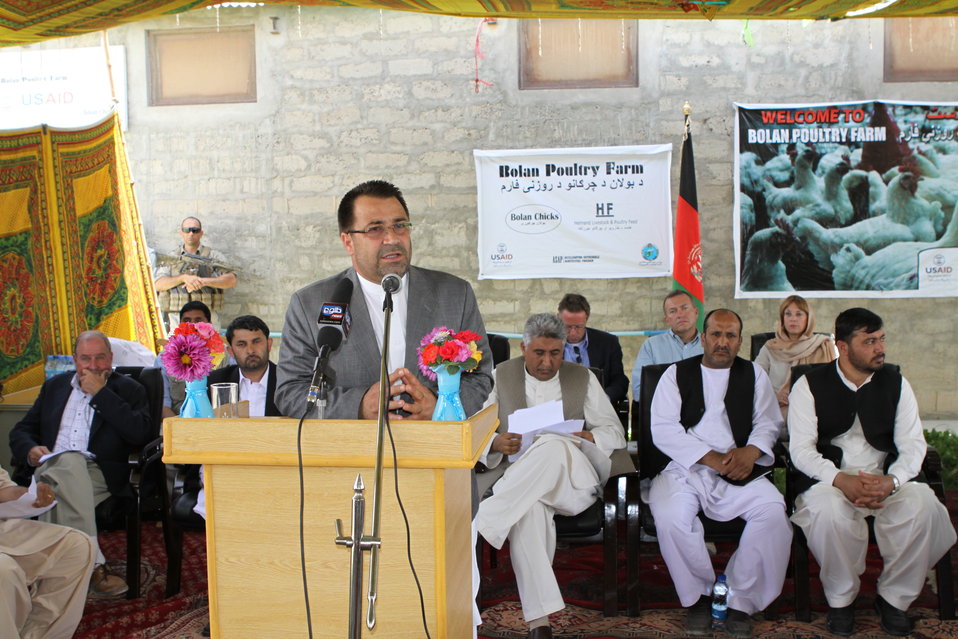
Bolan Poultry Farm